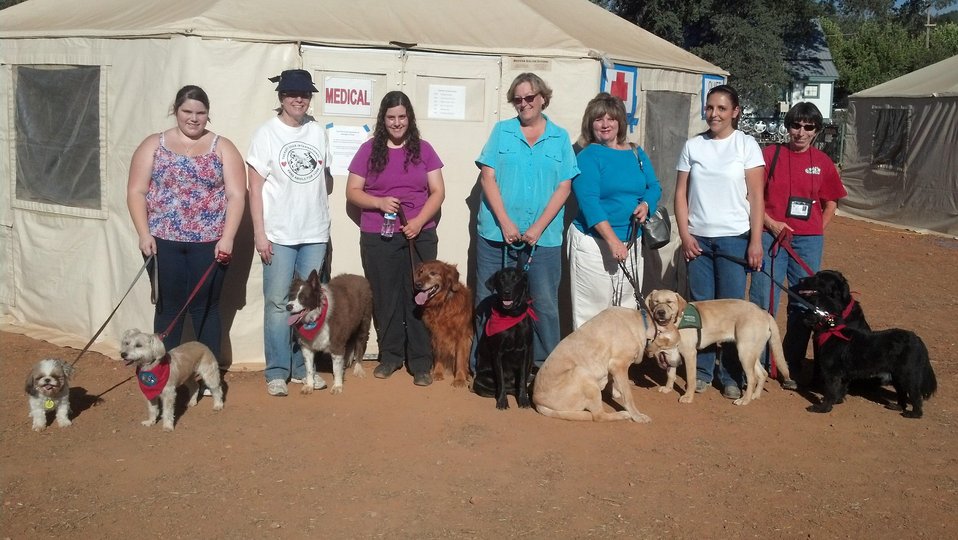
Therapy Dogs International visits the Tuolumne Base Camp on Thursday, Aug. 29, 2013. Firefighters were able to pet some specially trained local dogs. Therapy dogs are used to relieve stress in firefighters that have been on the fire line for extended periods. The Rim Fire in the Stanislaus National Forest near in California began on Aug. 17, 2013 and is under investigation. The fire has consumed approximately 235,841 acres and is 70% contained.